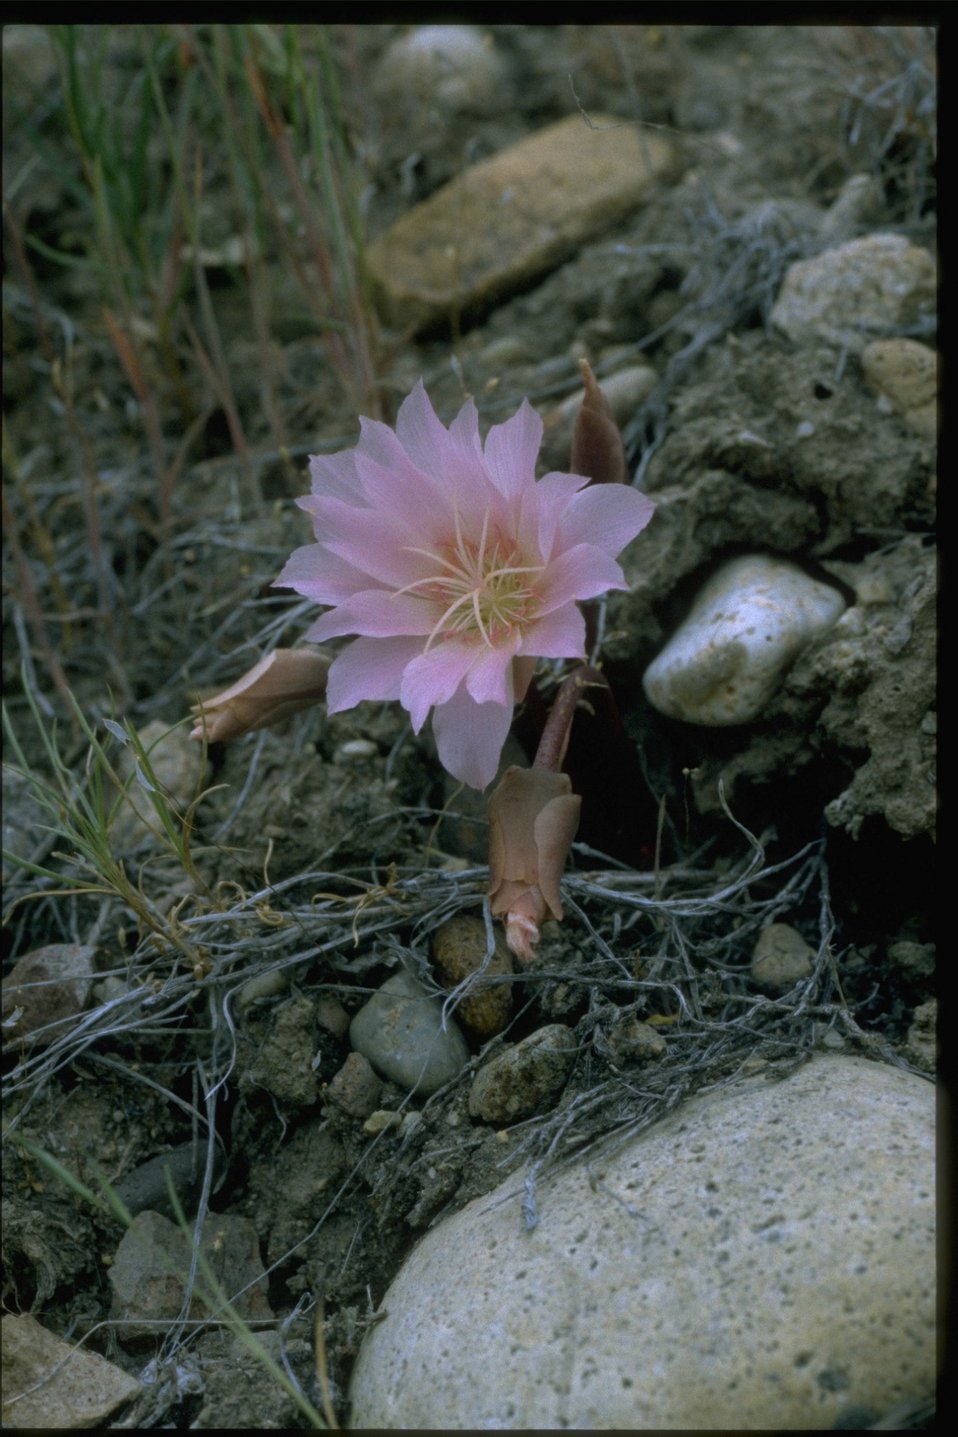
Closeup shot of Bitterroot.